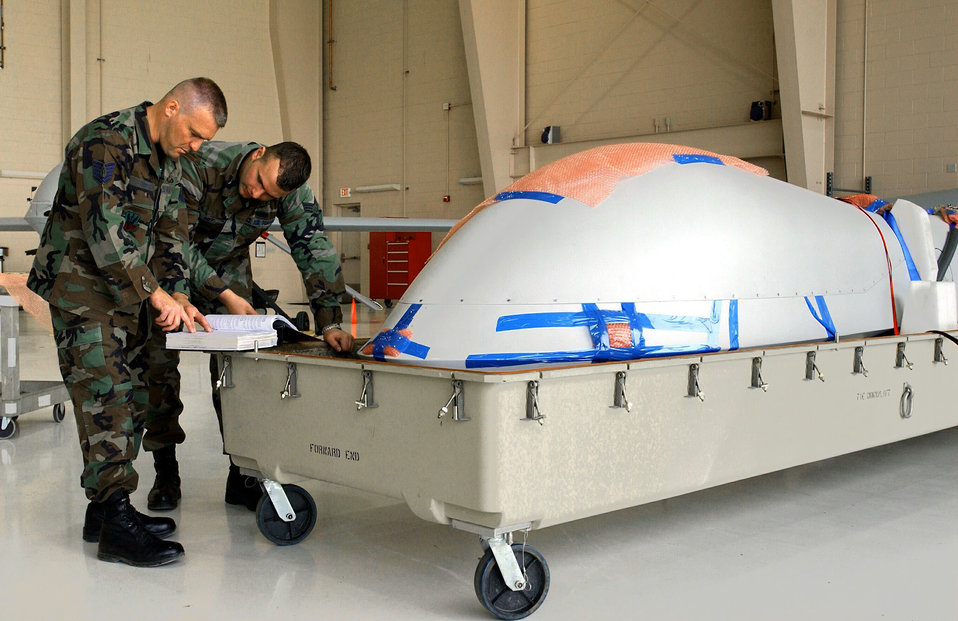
Predator on the move

NELLIS AIR FORCE BASE, Nev. (AFPN) -- Senior Airman Don Hoff (left) and Tech. Sgt. Stan Harper read packing checklists for a RQ-1 Predator unmanned aerial vehicle before strapping it down inside a shipping container so that it can be deployed. Both are members of the 757th Aircraft Maintenance Squadron at Indian Springs Air Field, Nev.